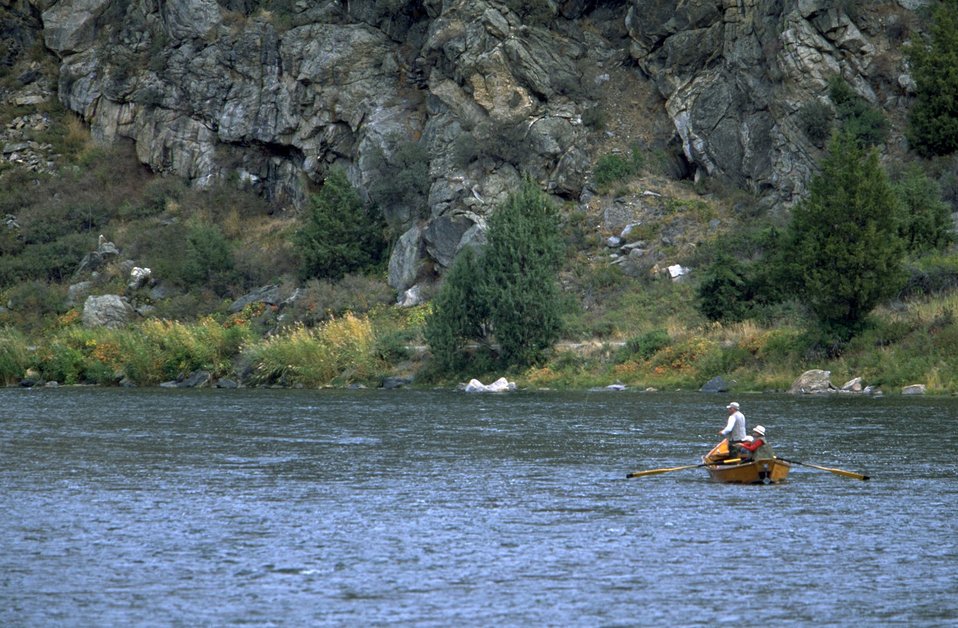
Float Fishing on the Madison River